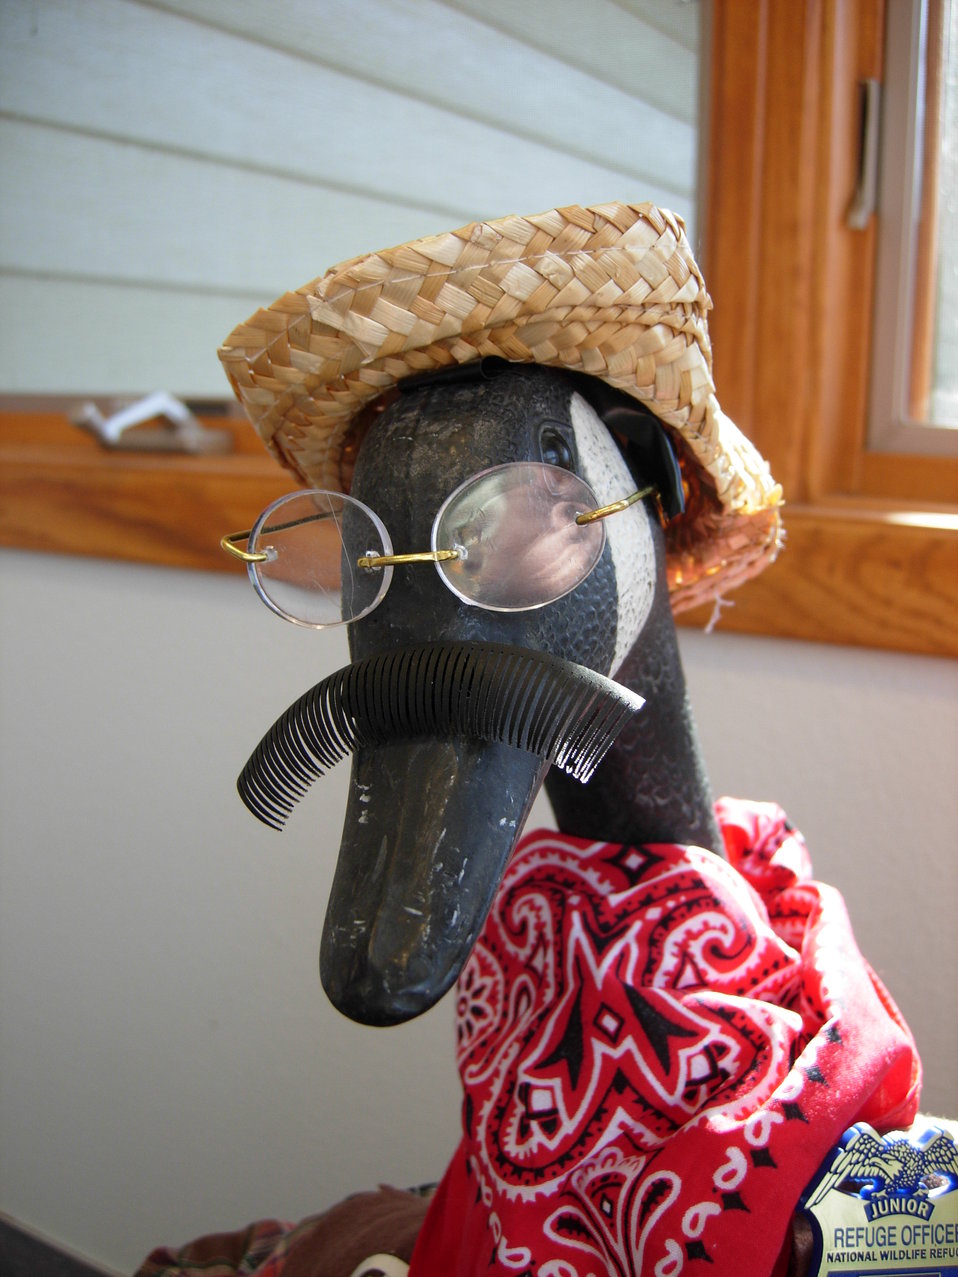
Teddy 'Goosevelt' at Des Lacs Refuge

Des Lacs Refuge participated in the Annual Kenmare 'Goose on the Loose' contest by entering refuge mascot 'Teddy GOOSEvelt!'